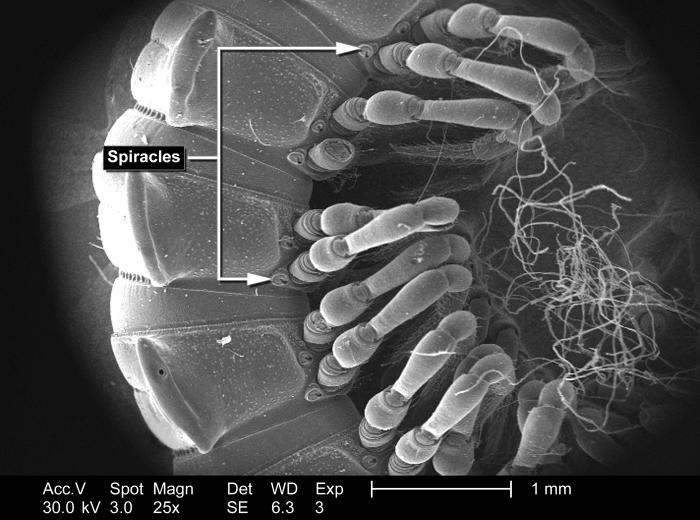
Magnified only 25x, this scanning electron micrograph (SEM) depicted the morphologic characteristics associated with an unidentified millipede's segmented body wall, at which point its jointed legs attached to the insect's exoskeleton. Millipedes are members of the insect Phylum Arthropoda, and the Class Diplopoda.Though the name 'millipede' means '1000 legs', these insects possess far fewer legs, which number more in the realm of 100 to 300, or 50 to 150 pairs. The reason there are two pairs of legs per segment is due to the fact that each uniquely morphologic segment is actually comprised of two fused segments, and are termed 'diplosegments'. The first 3 body segments actually comprise the thorax, whereupon, the first segment possesses no legs, and the 2nd and 3rd segments only possess 1 pair of legs.